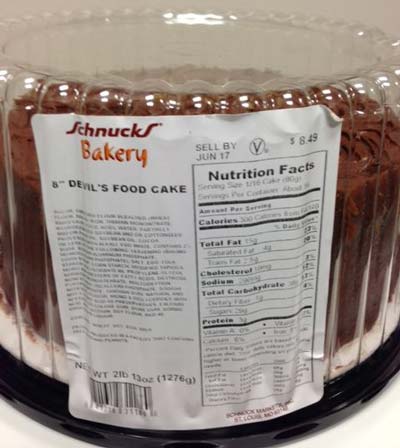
RECALLED – Cake

June 13, 2014 – Schnucks Bakery Recalls Devil’s Food Cakes Topped With Undeclared Pecans.